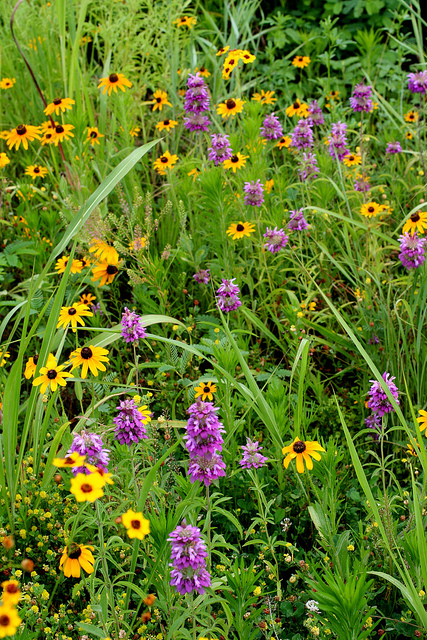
prairie wildflowers

black-eyed Susans and liatris in bloom
June 2011